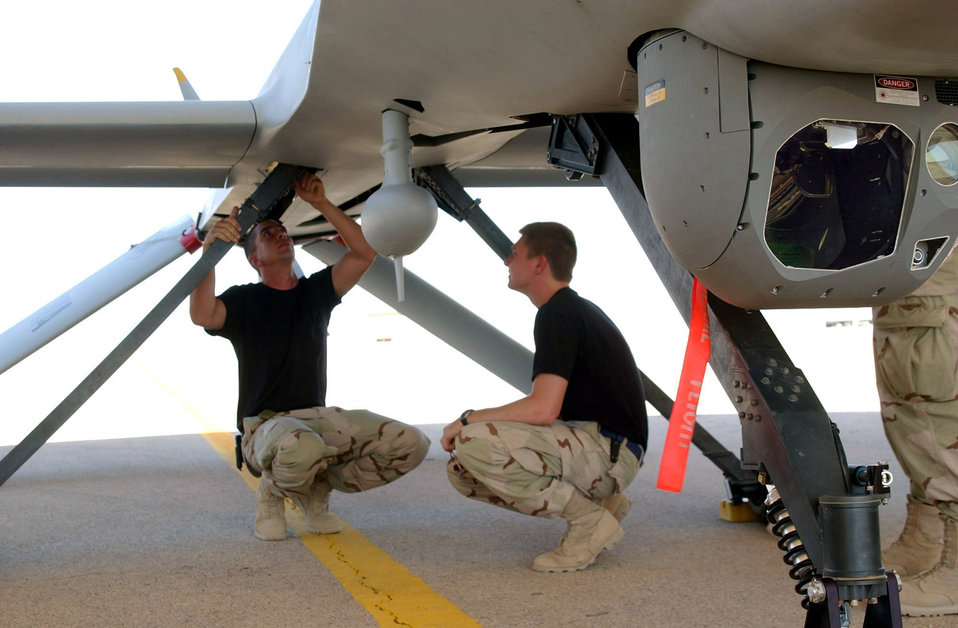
Predator post flight

TALLIL AIR BASE, Iraq (AFPN) -- Senior Airman Brady Martindale (left) and 1st Lt. Andrew Hackleman inspect the main landing gear of an MQ-1 Predator Unmanned Aerial Vehicle after a mission over Iraq on July 21. Martindale is an avionics specialist, and Hackleman is a maintenance officer. Both are deployed with the 332nd Air Expeditionary Wing supporting Operation Iraqi Freedom.